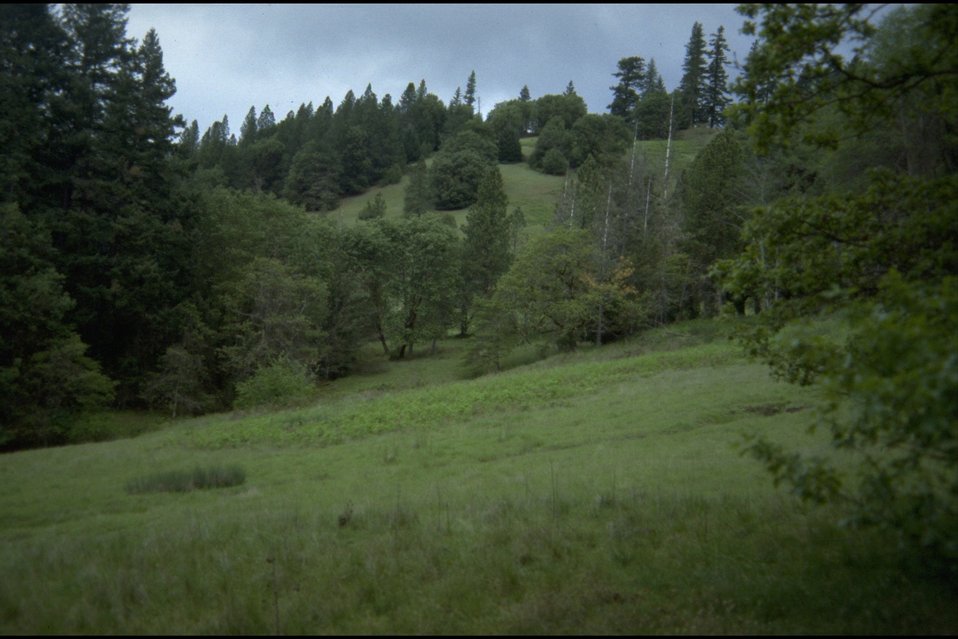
Rogue River; Meadow Creek Area, wild section.